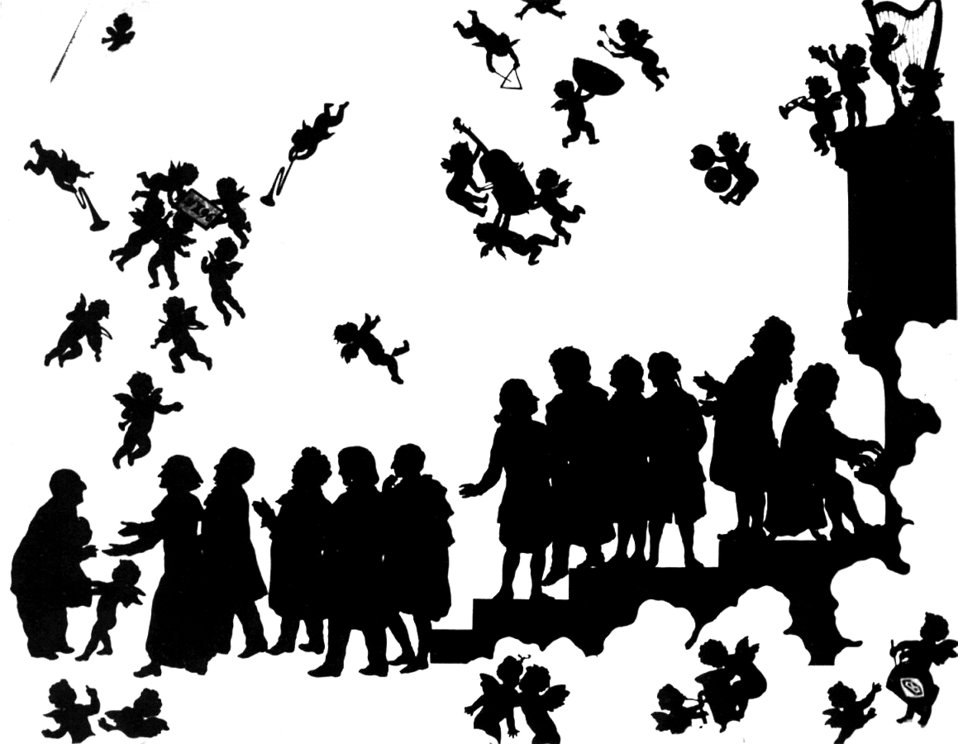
Anton Bruckner arrives in heaven